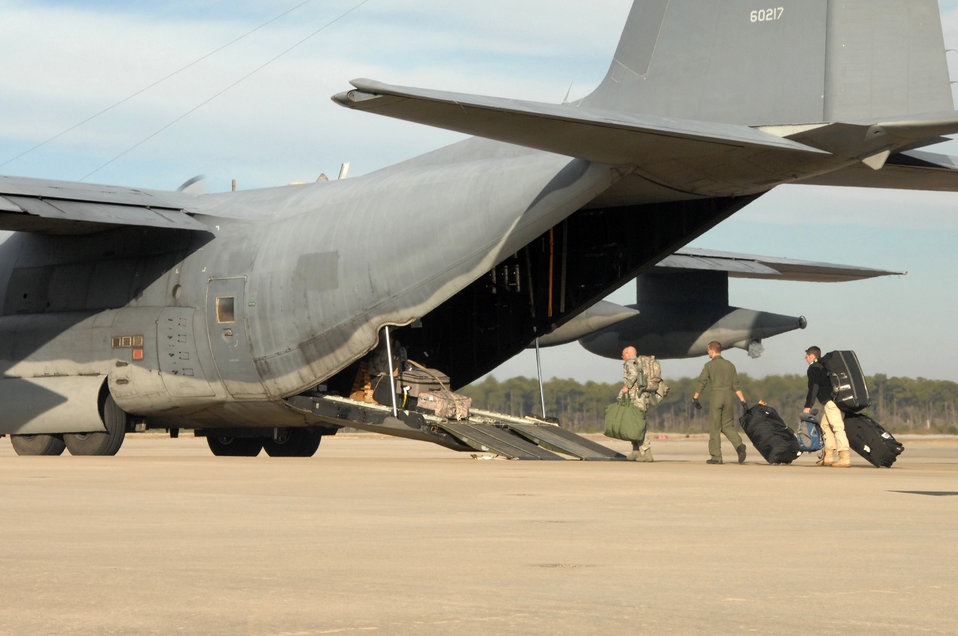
Special operations Airmen deploy to Haiti to provide humanitarian relief

Airmen load onto an MC-130H Combat Talon II before departing for Haiti Jan. 13, 2010 at Hurlburt Field, Fla. These Airmen will participate in the humanitarian assistance and disaster relief mission in Haiti. The Airmen are assigned to the Air Force Special Operations Command.